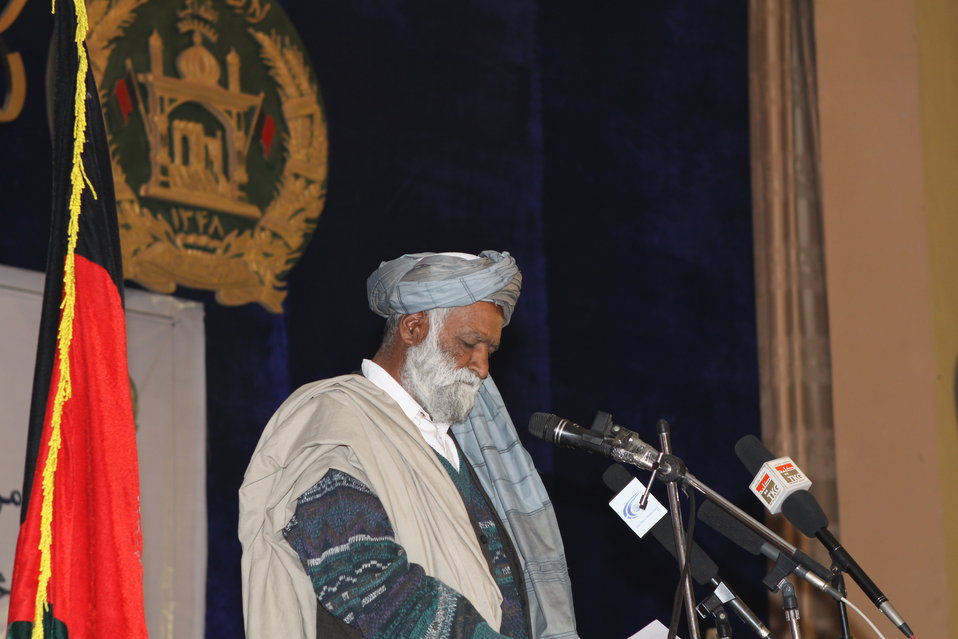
Community Health Workers Celebrated

Kabul, Afghanistan | December 5, 2010 — In support of the United Nations designated International Volunteer Day for Economic and Social Development, Afghanistan’s Ministry of Public Health celebrated its annual Community Health Worker Day today. Acting Minister of Public Health Dr. Suraya Dalil, USAID Senior Deputy Mission Director Robert Hellyer, other government officials, and international donors joined in recognizing the critical contribution of community health workers in Afghanistan and encouraging them to continue their voluntary support to their communities.
The event praised the contributions of the more than 22,000 volunteers throughout the country who deliver community level health-education, counseling, and services out of village health posts located in private homes. The Ministry of Public Health envisioned that community-based healthcare programs will actively encourage communities and families to adopt healthy lifestyles and behaviors, and provide families access to high quality and socially acceptable preventative medicine and life-saving services.
“We have 22,000 community health workers in Afghanistan that are able to implement the basic and standard medicines. They all have been trained through a job description,” said Minister Dalil. Addressing the health workers, she added, “I am proud and feel powerful that I have people like you.”
USAID-funded health projects collaborate closely with the Ministry of Public Health to improve the health and nutritional status of Afghans, provide quality primary healthcare, and promote healthy behaviors at the community and household-levels. USAID supported the training of more than 9,000 of the volunteer community health workers currently working in Afghanistan.
“On behalf of the American people, I congratulate the Community Health Workers for their diligence to gain the skills and knowledge necessary to serve their communities in this important role,” said USAID Senior Deputy Mission Director Hellyer. “USAID strongly supports community based health care and believes that quality community-based health services are essential to reaching Afghanistan’s Millennium Development Goals.”
To support the Basic Package of Health Services, USAID assisted in developing the community health worker training manual, helped train community health worker supervisors and master-trainers, facilitated in-service training, and produced and developed reporting tools, job aids, and education materials.